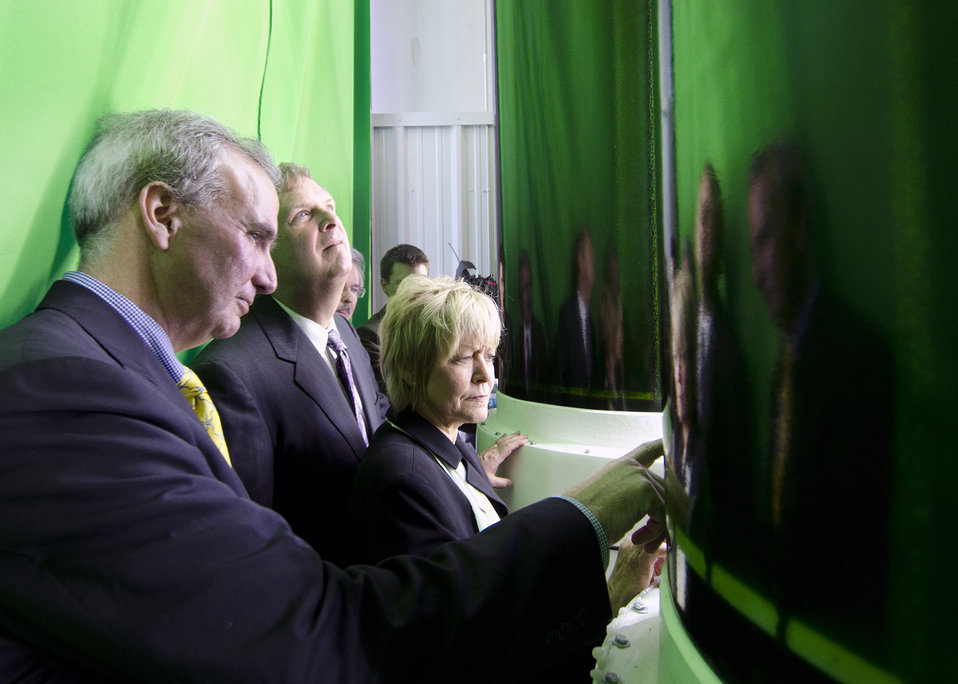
BioProcess Algae CEO Tim Burns (left) shows Agriculture Secretary Tom Vilsack (left) and his wife Christie the Grower Harvester Technology bioreactors in Phase II at the BioProcess Algae facility at Green Plains Renewable Energy (GPRE), Inc. on Friday, Apr. 15, 2011 in Shenandoah, IA. Secretary Vilsack spoke at the Grand Opening of Phase II at GPRE. Phase II is a key component in the commercial scale photo bioreactors/harvesters during a tour of the facility. Secretary was at the facility for the grand opening ceremony The operation is co-located within an GPRE’s ethanol factory and where BioProcess Algae technology is used to waste products; carbon dioxide, recycled heat and water to mass-produce algae. Algae from this facility are used for animal feeds, pharmaceutical and beauty products.